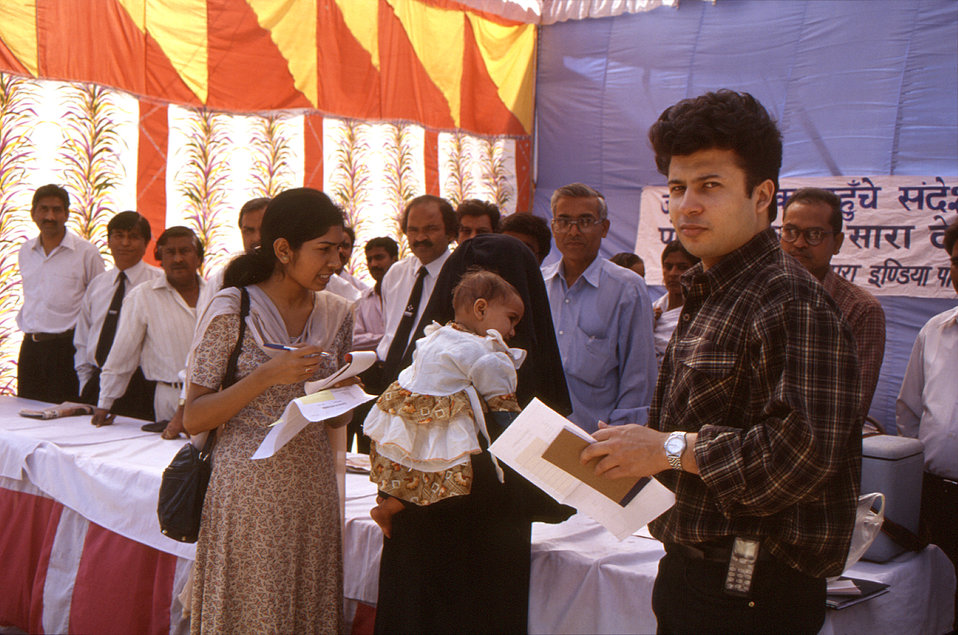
These were members of the local Indian team that worked closely with the CDC Stop Transmission of Polio (STOP) team participants to implement the country's polio eradication program. With pen in hand, Ms. Vertika Arya, an administrative assistant from the Gorakhpur office, was shown here conducting an interview with a Burka-clad Muslim mother and her child, while in the foreground, facing the camera, was Mr. Parag Sharma. Such interviews educated the unfamiliar with the details associated with polio, and the protocols associated with the vaccination process.The image was provided by Chris Zahniser, B.S.N., R.N., M.P.H., a STOP team member and photographer, who was assigned to the state of Uttar Pradesh in northern India, and spent three months working in the Districts of Gorakhpur and Deoria.